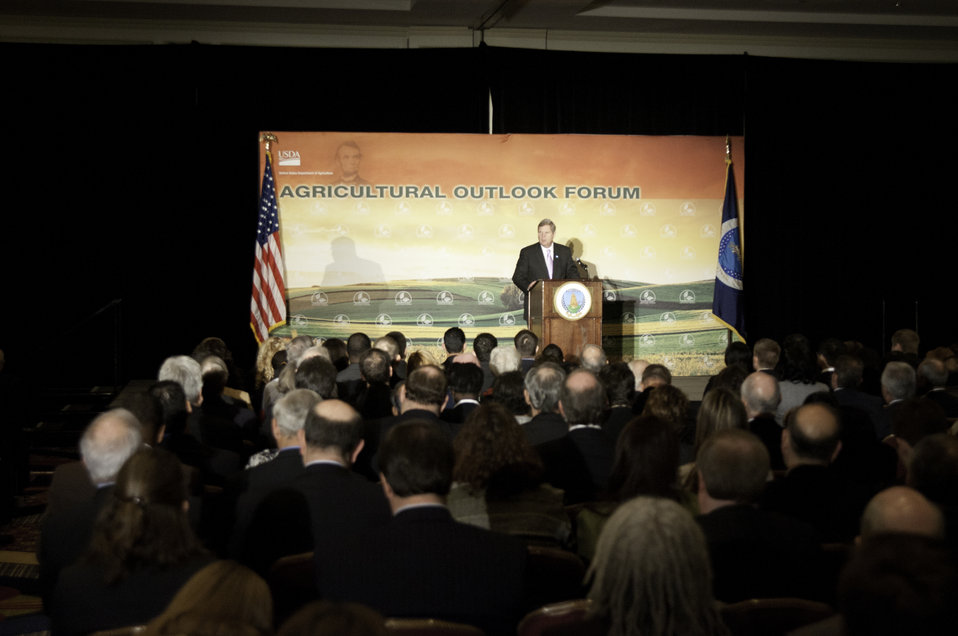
Agriculture Secretary Tom Vilsack makes remarks at the 2012 Agricultural Outlook Forum, “Moving Agriculture Forward” in Arlington, VA. On Thursday, February 23, 2012.